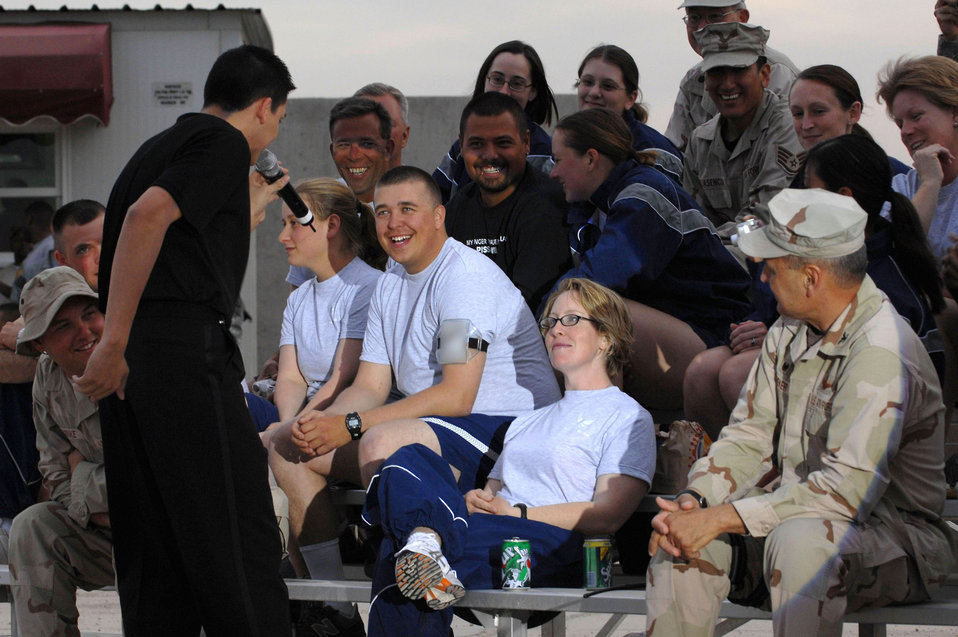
Tops in Blue perform for Airmen in Iraq

A Tops in Blue Airmen sings to Airmen and Soldiers April 26 at Kirkuk Air Base, Iraq. The 30-member group's goal is to enhance mission productivity for Air Force members around the world. Tops in Blue showcases music, dance and comedy -- all performed by active-duty Airmen who perform 90 minutes of non-stop live entertainment.